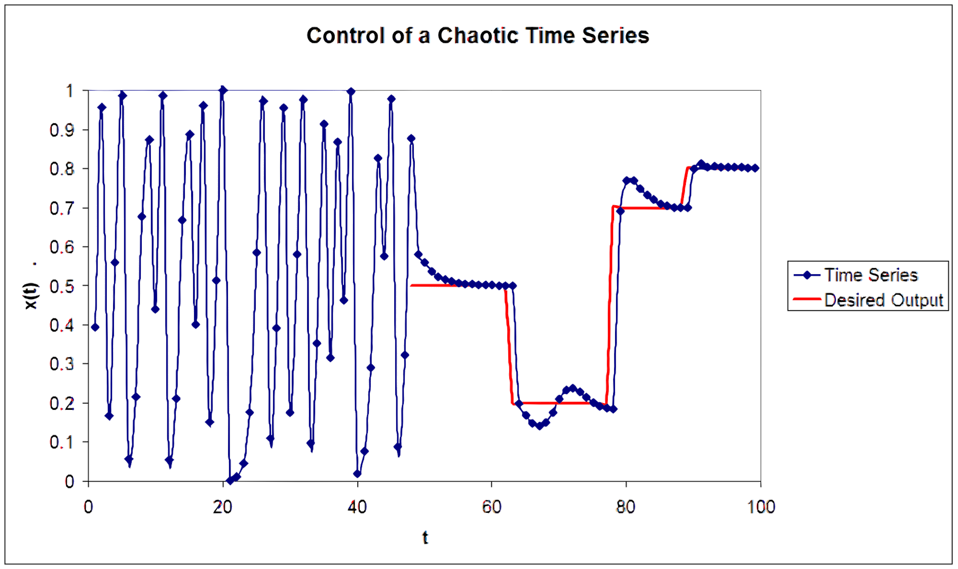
Radial bias function network - Figure 10: Control of the logistic map. The system is allowed to evolve naturally for 49 time steps. At time 50 control is turned on. The desired trajectory for the time series is red. The system under control learns the underlying dynamics and drives the time series to the desired output. The architecture is the same as for the time series prediction example.